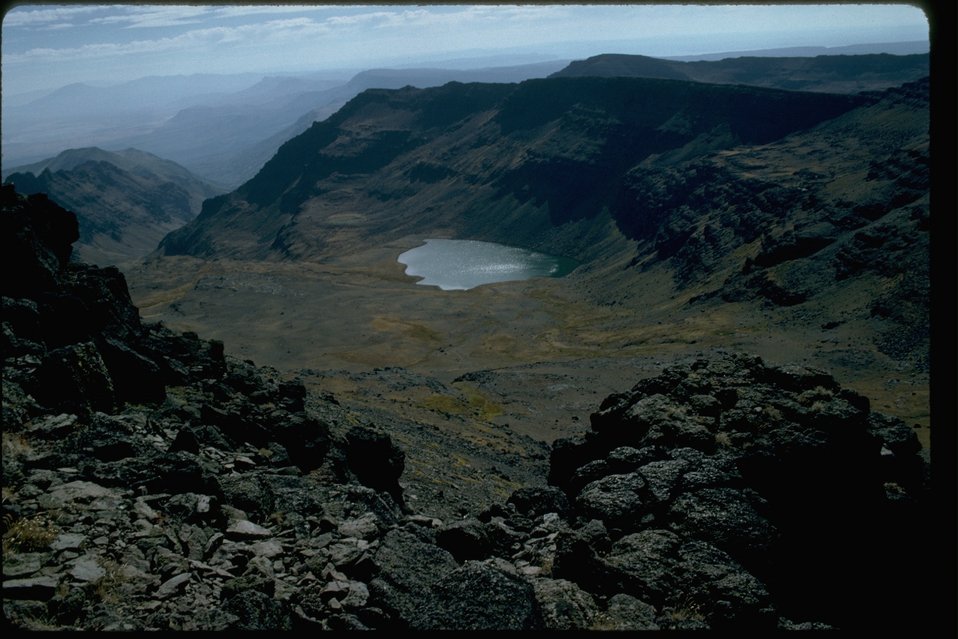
A southern view of Wild Horse Lake Canyon on Steens Mountain in Southeast Oregon.